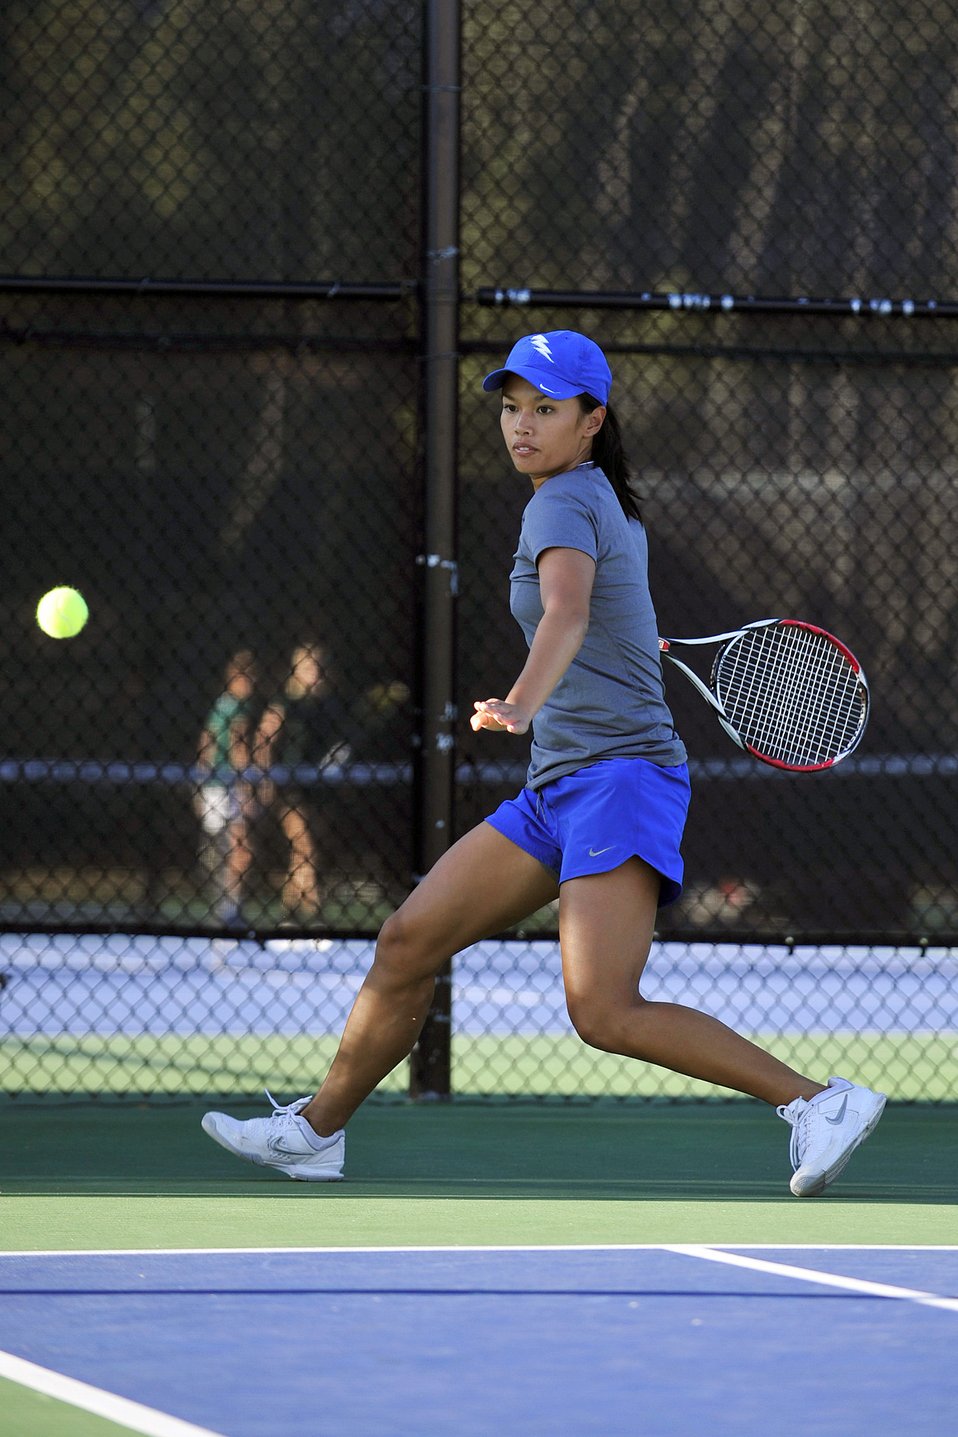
Cadets compete in tennis tournament

Air Force Academy senior Christen Monreal returns the ball during the